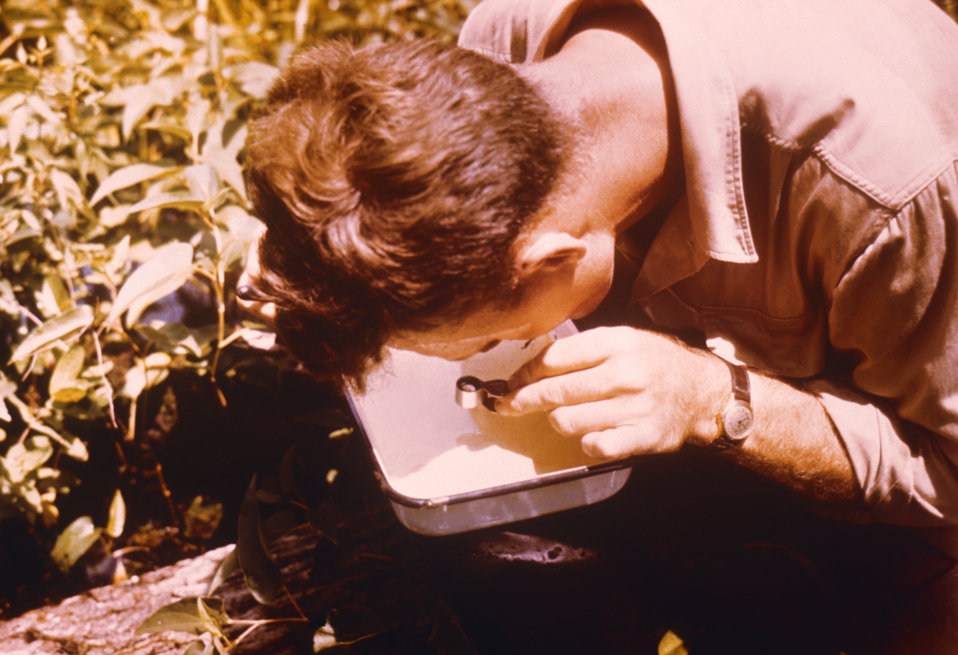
A photograph of an entomologist examining mosquito larvae in a dipper with a hand lens.